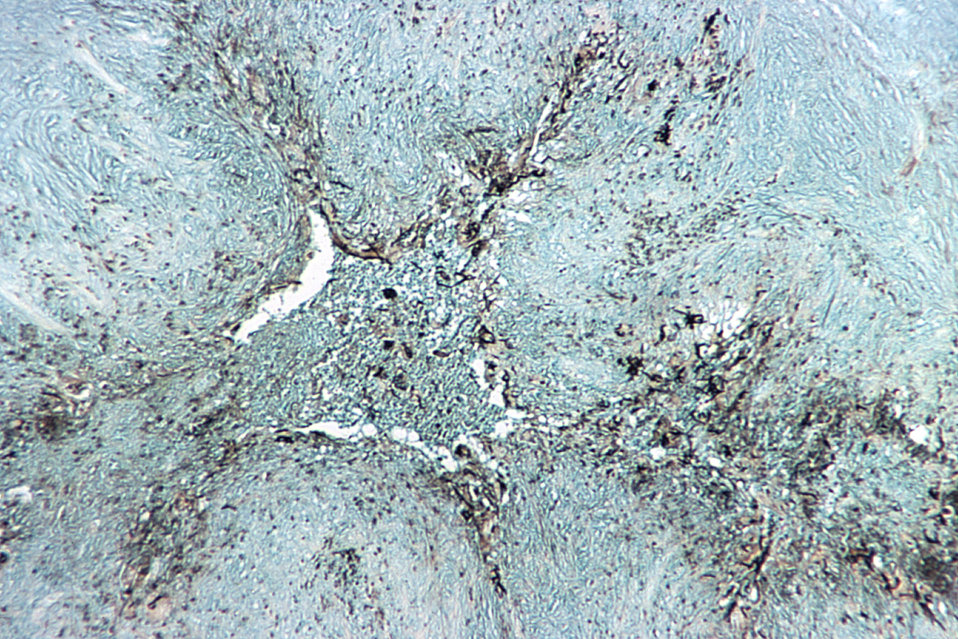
Prepared using a Gomori staining technique, and under a relatively low magnification of 50X, this photomicrograph reveals histopathologic changes indicative of the presence of the dematiaceous fungal organism, Phialophora parasitica. Known to be a causative agent for chromoblastomycosis and phaeohyphomycosis, which affect the subcutaneous tissues, however, in the case of phaeohyphomycosis, many organ systems may be affected, even becoming disseminated throughout the body.